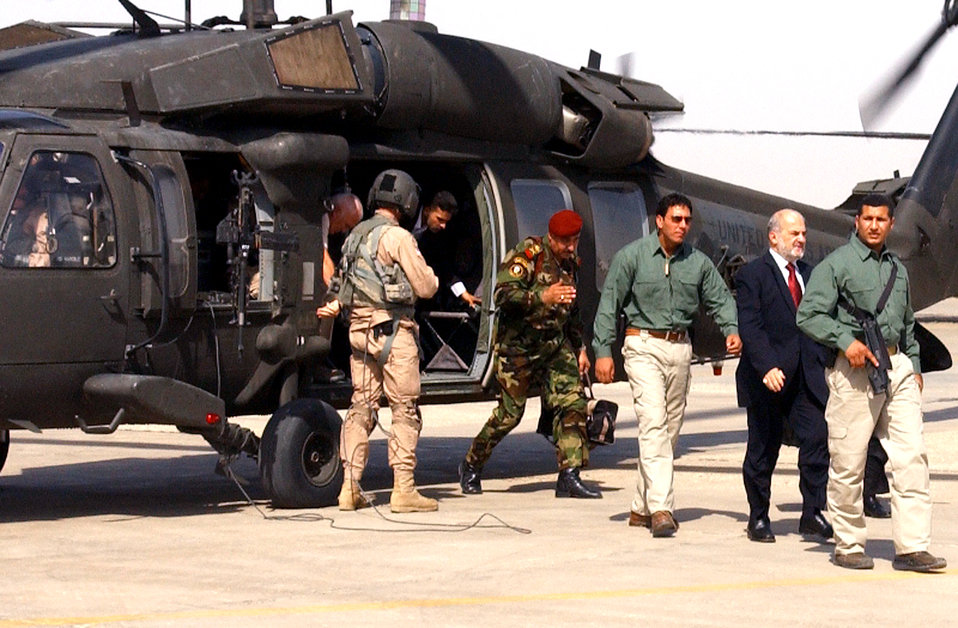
Distinguished visitor

Former Prime Minister of Iraq, Ibraham al-Jafaari, is escorted by his security team on the flightline of Ali Base, Iraq, after arriving for a visit on Monday, June 5, 2006.